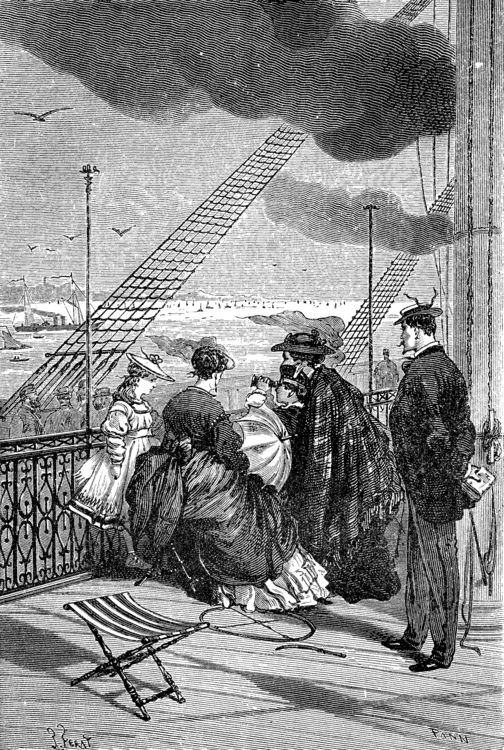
An illustration from Jules Verne's novel 'A Floating City' (1869) drawn by Jules Férat. Polski: Ilustracja powieści Juliusza Verne'a 'Pływające miasto' (1869) autorstwa Julesa Férata. Français : Jules Verne: 'Une Ville flottante' (1869), dessins par Jules Férat. Orginal text: Français : Bientôt nous eûmes connaissance de Queen’s-Town.